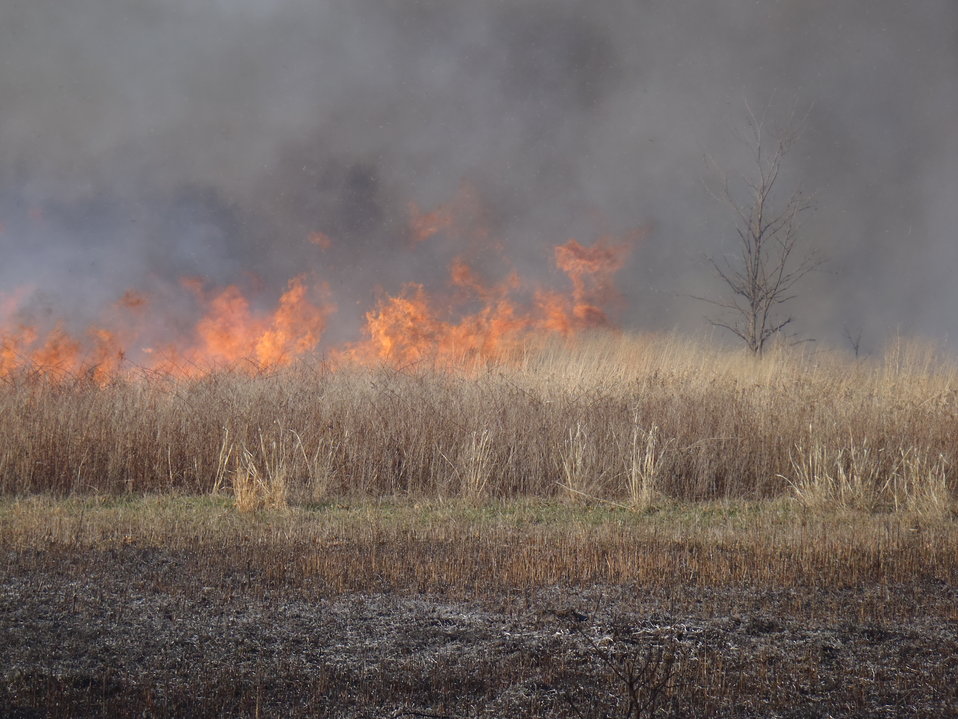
Fire Management in the Tall-grass Prairie

Fire is used as a management tool in the Tall-grass Prairie.